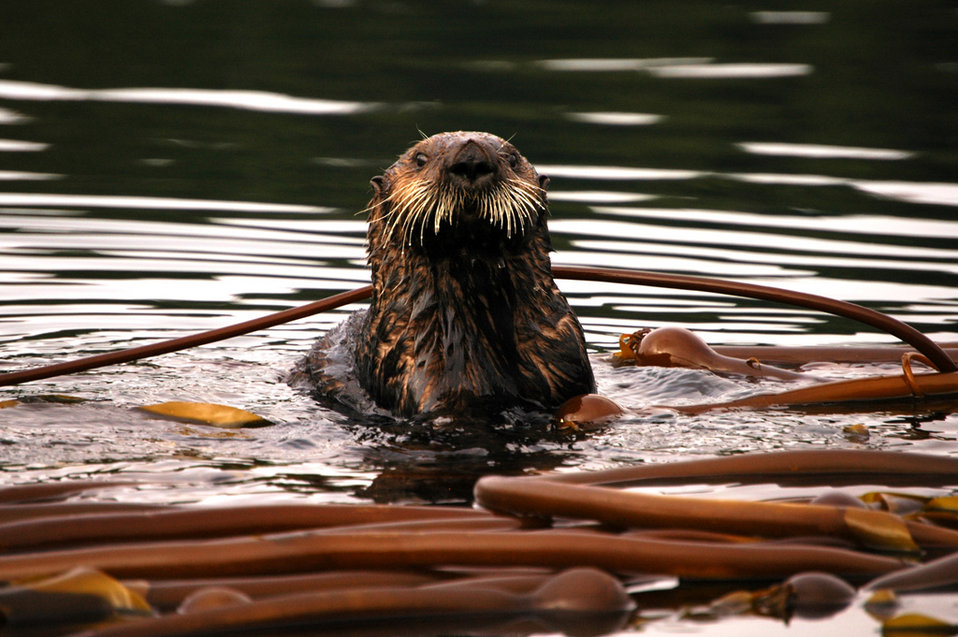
Alaska Wild Life

Uploaded for Flickr member mollypocket09.